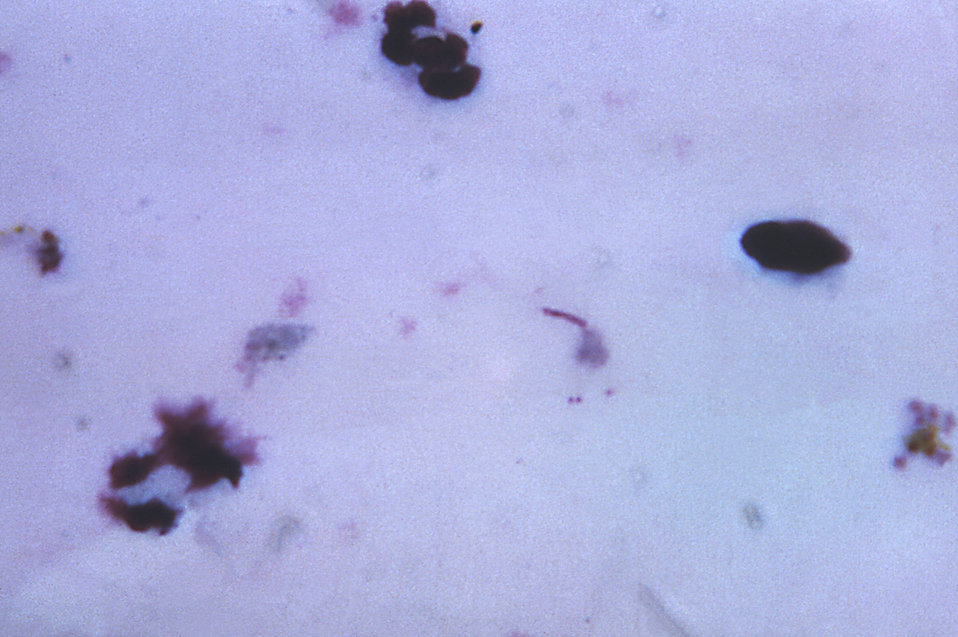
This thick film photomicrograph depicts Plasmodium malariae parasites, and an artifactual bacillus bacterium.